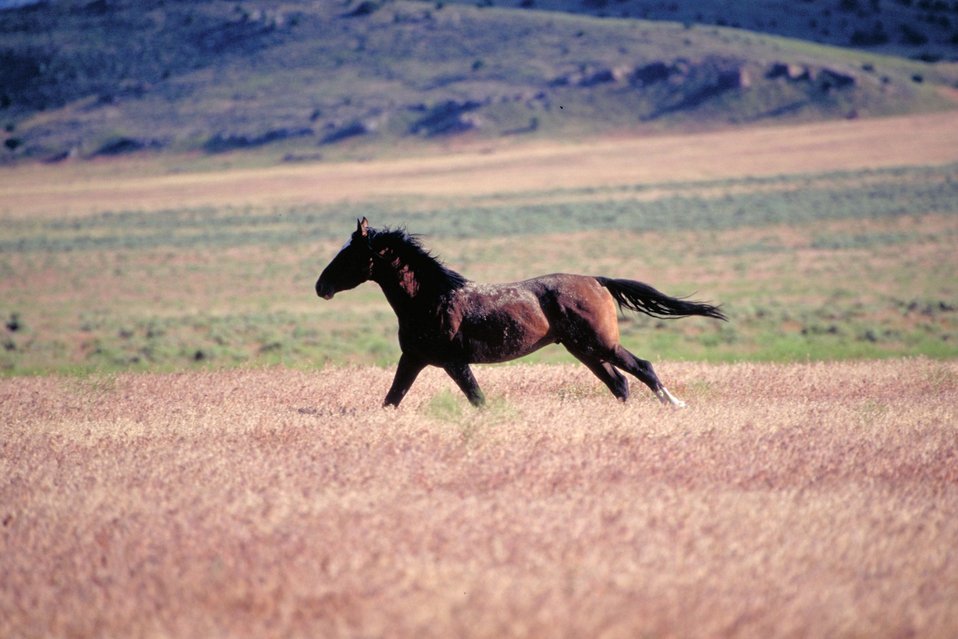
Onaqui Herd near Dugway, Utah.